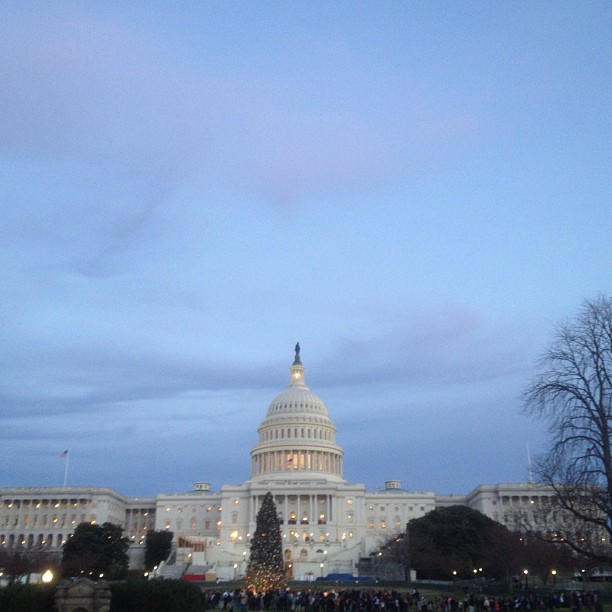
Architect of Capitol, Stephen T. Ayers, about to begin ceremony. #capitolchristmas